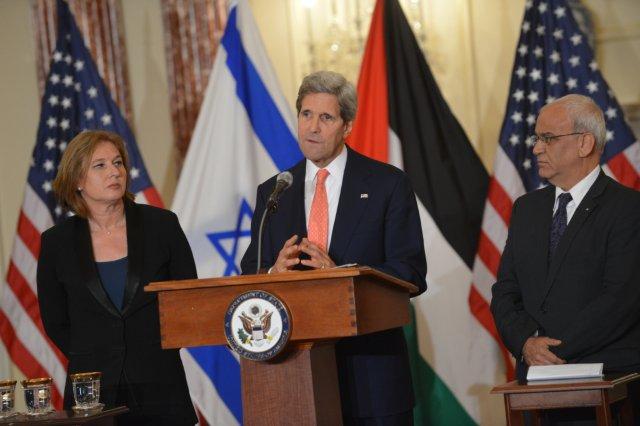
Secretary Kerry, Israeli Justice Minister Livni, and Palestinian Chief Negotiator Erekat Address Reporters

U.S. Secretary of State John Kerry, Israeli Justice Minister Tzipi Livni, and Palestinian Chief Negotiator Saeb Erekat address reporters on the Middle East Peace Process Talks at the U.S. Department of State in Washington, D.C., on July 30, 2013.